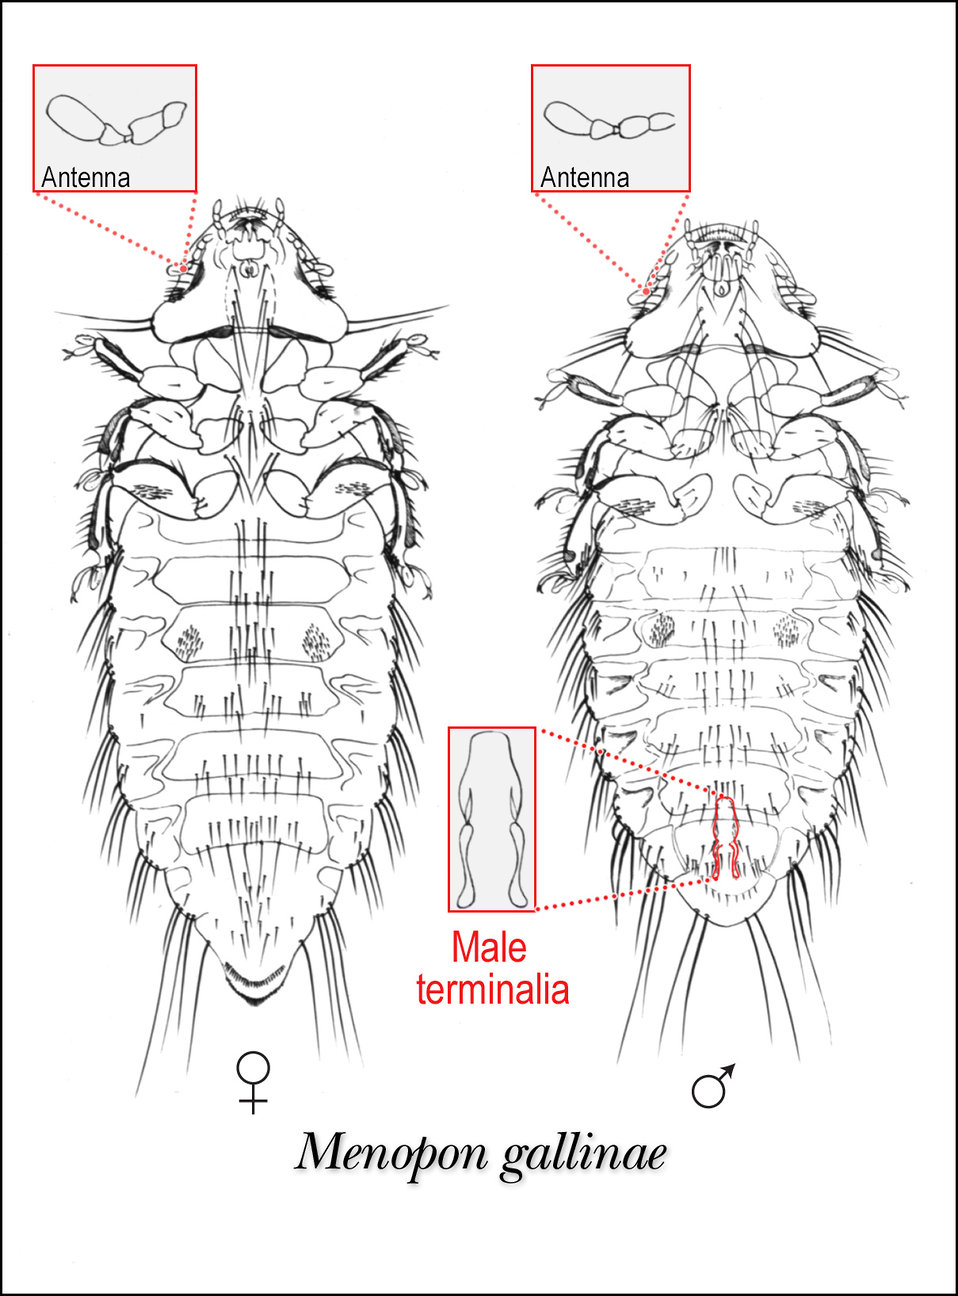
This illustration of the female and male lice, Menopon gallinae, shows the ventral aspect of this species.